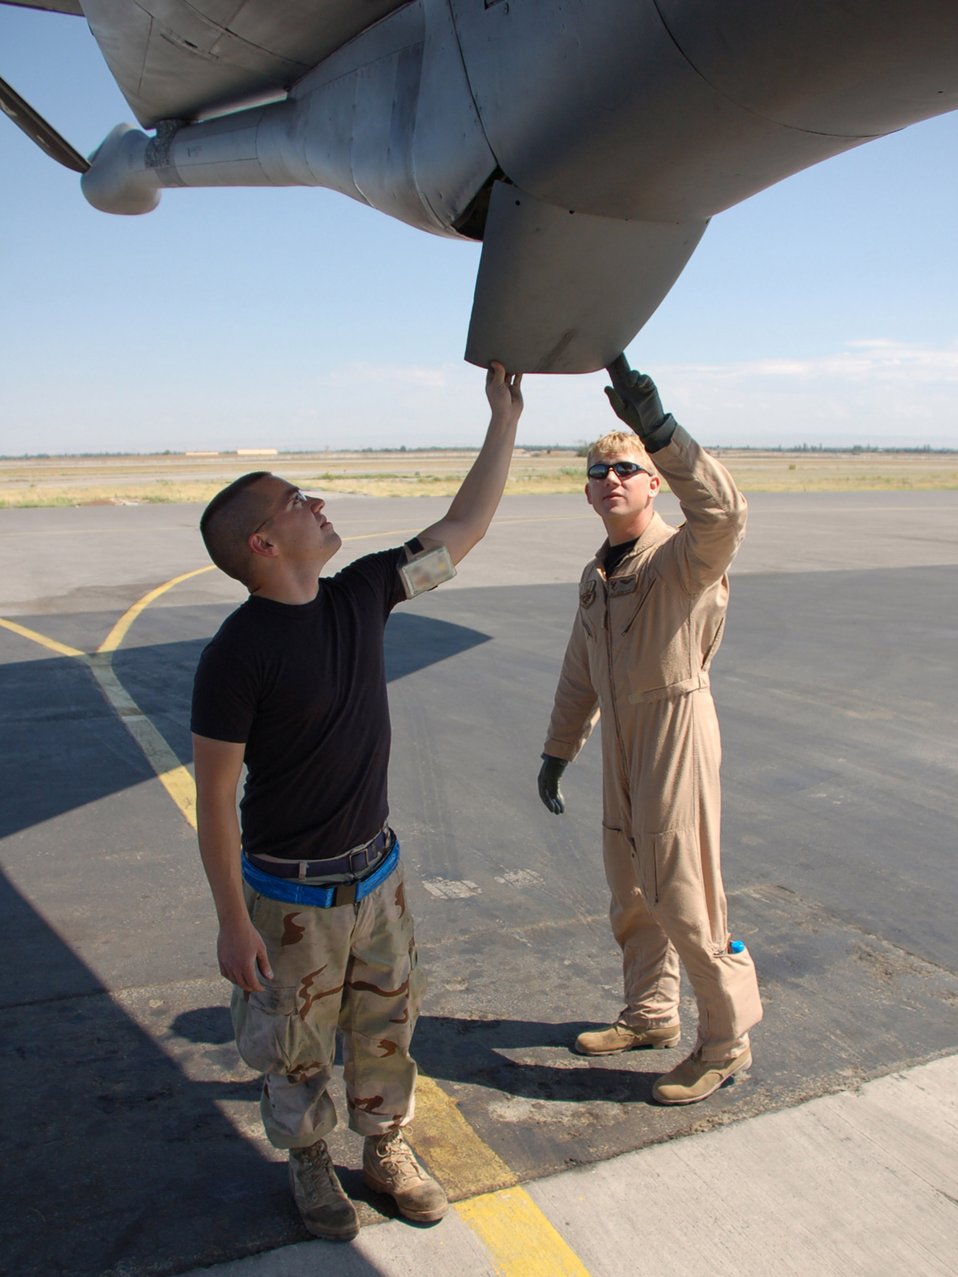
Expeditionary maintenance group gets fuel flying

Airman 1st Class Alex Arnold and Capt. Matthew Kopp check out boom components as part of the preflight inspection of a KC-135 Stratotanker July 8 at Manas Air Base, Kyrgyzstan. Airman Arnold is with the 376th Expeditionary Aircraft Maintenance Squadron and Captain Kopp is with the 22nd Expeditionary Air Refueling Squadron.